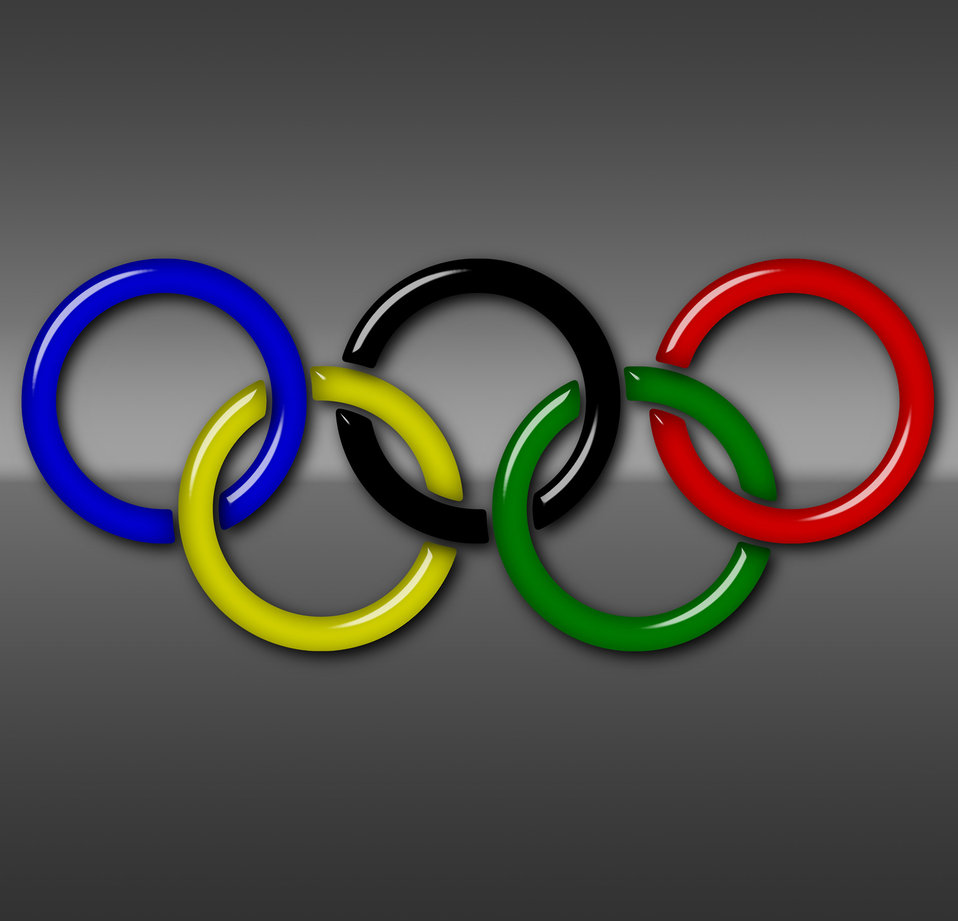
Olympic rings 4

The olympic rings with glass effects, over a gradient background..